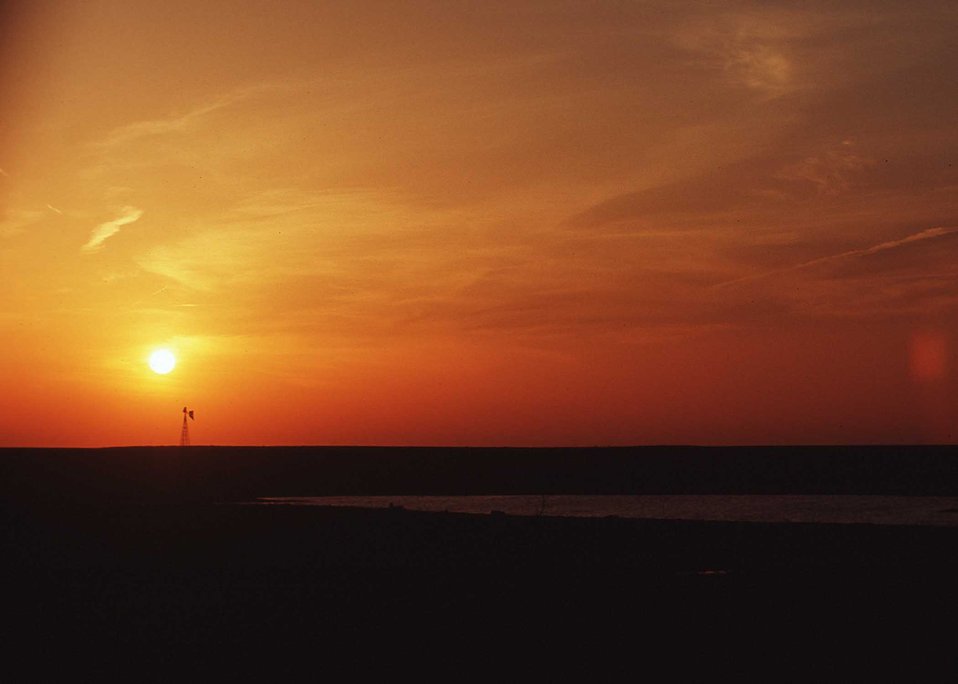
Sunset in Eastern South Dakota.